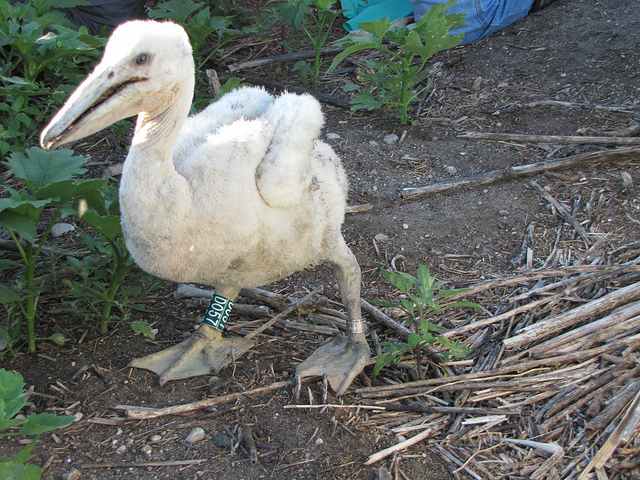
white pelican chick

Chase Lake National Wildlife Refuge, ND